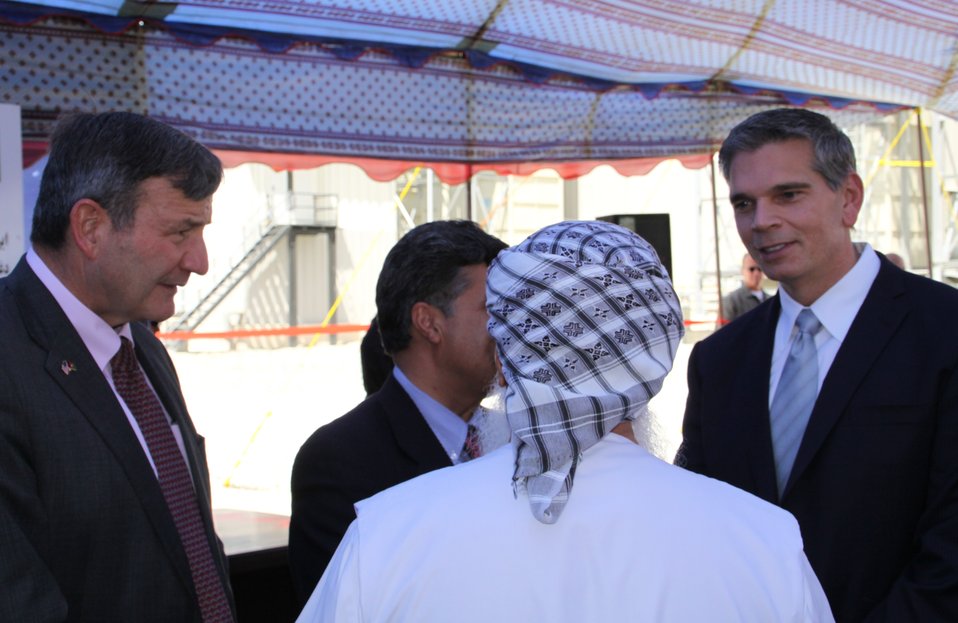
105 MW Tarakhil Power Plant Handover